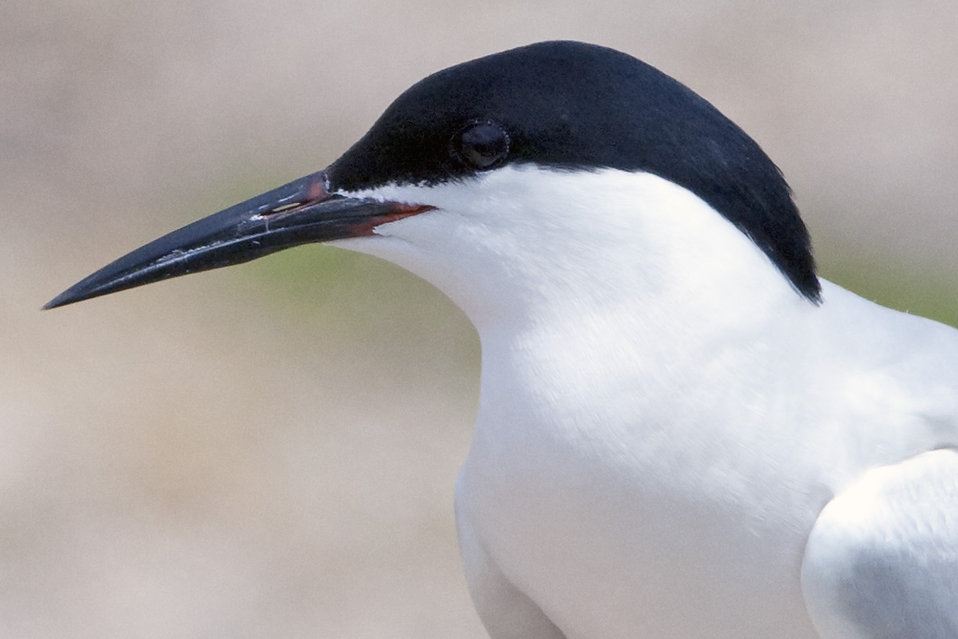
Roseate Tern

Petit Manan Island, Maine Coastal Islands NWR. Summer with the Seabirds blog: mainecoastalislands.wordpress.com/2010/08/01/terns/